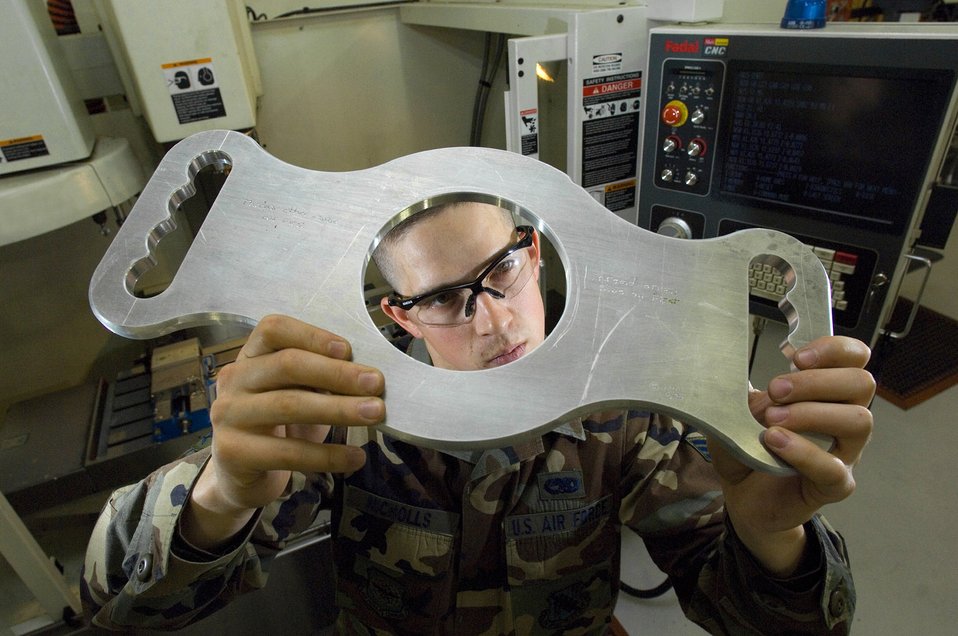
KC-135 Stratotanker

Senior Airman Stephen Nicolls inspects a surge boot installation tool he created to service a KC-135R Stratotanker boom pod. The tool had to be created because none were being manufactured any longer for the aging tanker aircraft. Airman Nicholls is an aircraft metals technician with the 126th Air Refueling Wing at Scott Air Force Base, Ill.